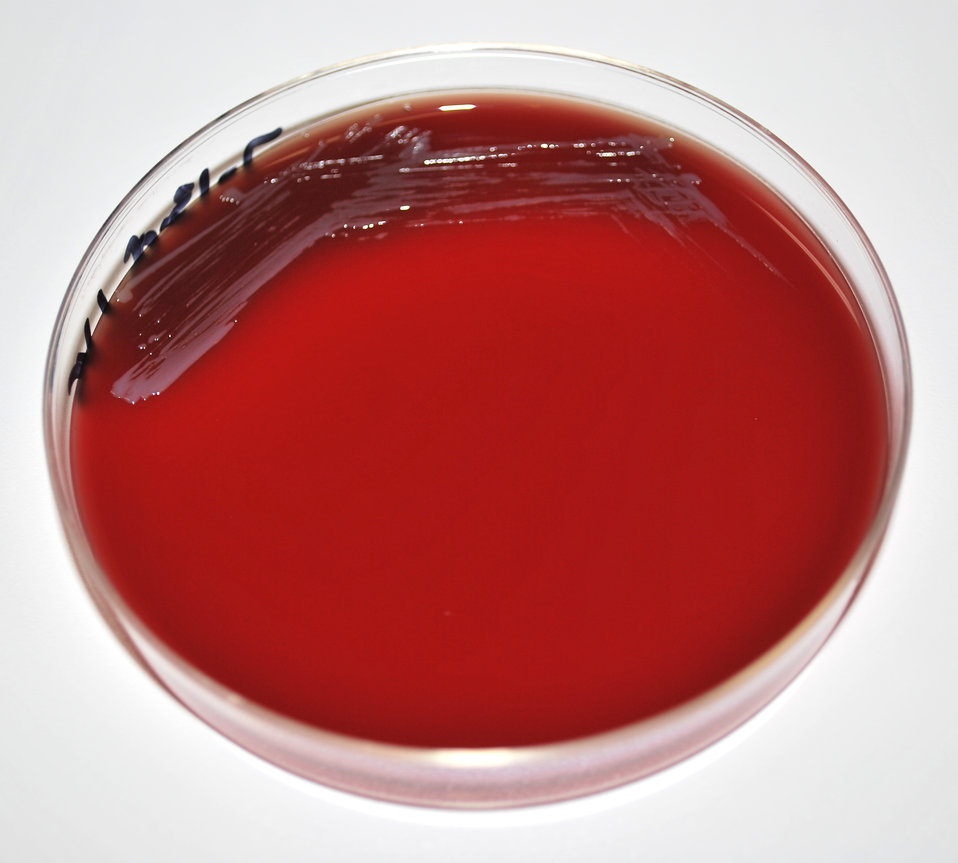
This image depicts a Petri dish containing a sheep's blood agar (SBA) medium, which had been inoculated with Gram-negative Francisella tularensis live vaccine strain (LVS) bacteria. F. tularensis is the pathogen responsible for causing the disease tularemia. This was the appearance of the colonial growth after 48 hours of incubation. What is tularemia?